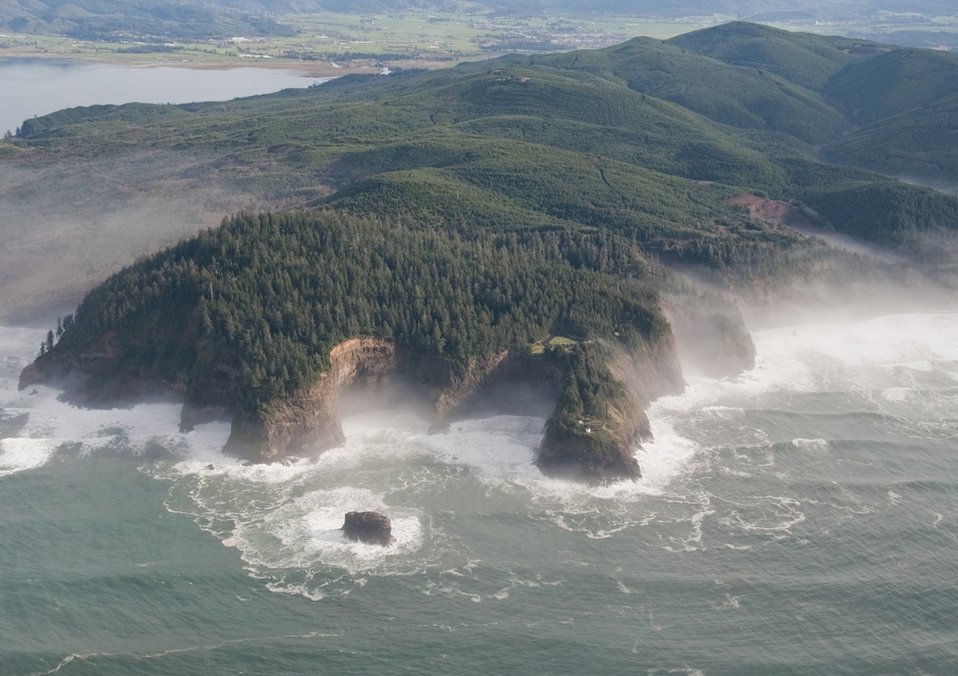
Cape Meares NWR and Oregon scenic viewpoint

An aerial view shows surf hitting the rocky cliffs of Cape Meares National Wildlife Refuge and Oregon scenic viewpoint.